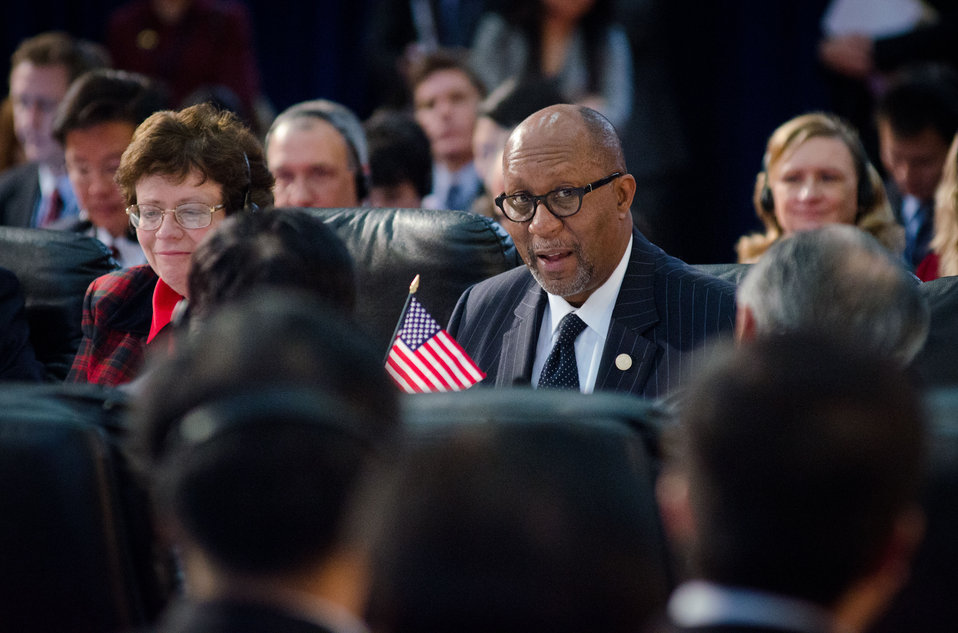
U.S. Trade Representative Ron Kirk speaks at the 23rd Session of the U.S. China Joint Commission on Commerce and Trade (JCCT) at the Andrew W. Mellon Auditorium in Washington, D.C. on Wednesday, Dec. 19, 2012. The JCCT holds high-level plenary meetings on an annual basis to review progress made by working groups that focus on a wide variety of trade issues. These working groups meet throughout the year to address topics such as intellectual property rights, agriculture, pharmaceuticals and medical devices, information technology, tourism, commercial law, environment, and statistics.